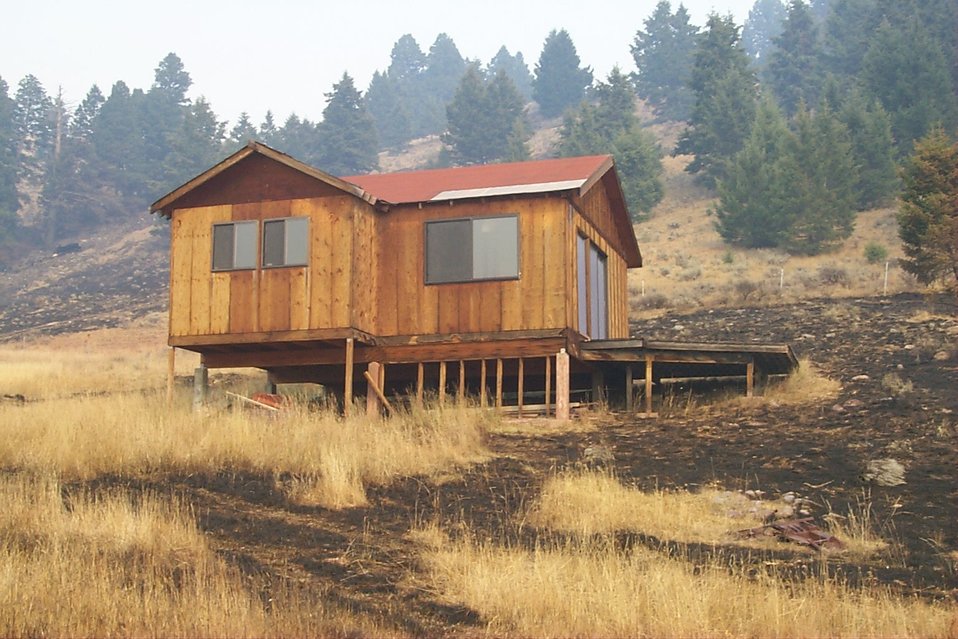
Urban interface Fire Clearwater Fire Salmon Field Office USRD Upper Snake River District